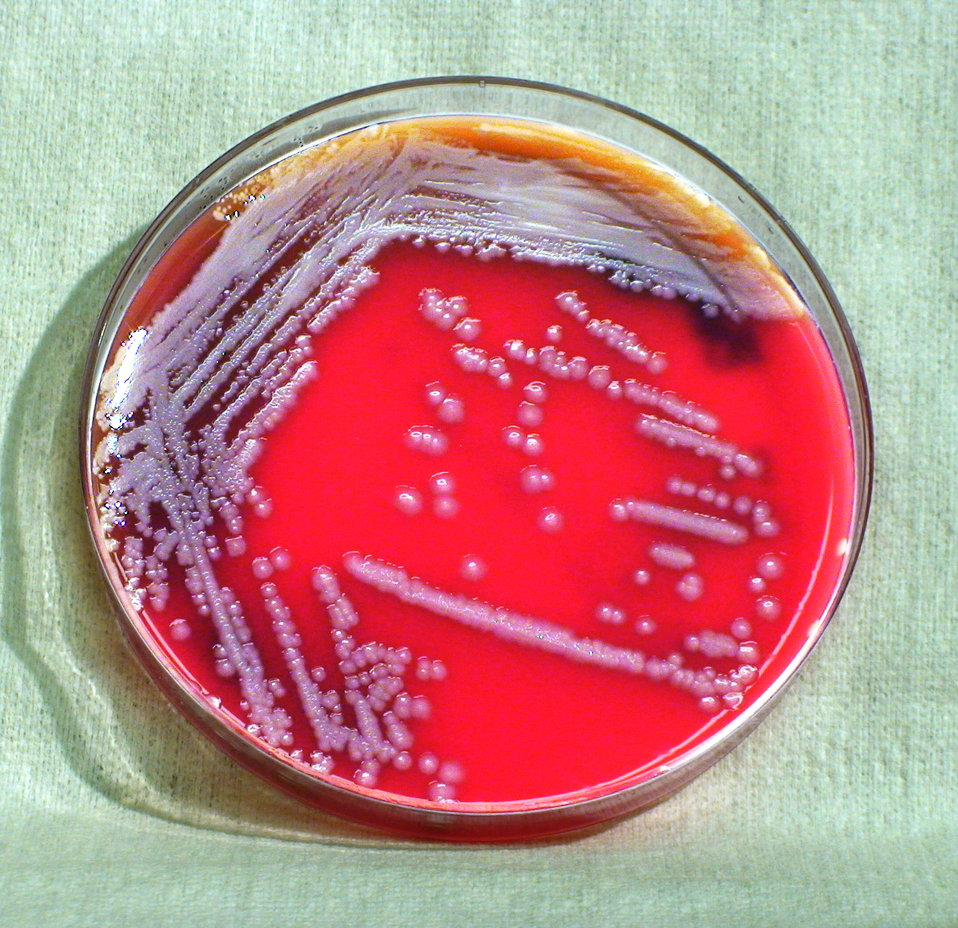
This photograph depicts the colonial morphology displayed by Gram-negative Burkholderia thailandensis bacteria, which was grown on a medium of sheep's blood agar (SBA), for a 48 hour time period, at a temperature of 37�C. See PHIL 12402, for a closer view of these bacterial colonies. Also, see both PHIL 12408 and 12409, for views of this bacterial specie, grown on the same medium, for the same amount of time, however, at a greater temperature of 42�C. PHIL 12423 and 12424 display B. thailandensis colonial growth on the same medium, and temperature, but for only half the time (24hr). Finally, PHIL 12431 and 12432 display this specie's bacterial growth, again on SBA, for half the time (24hr), and at a greater temperature (42�C).